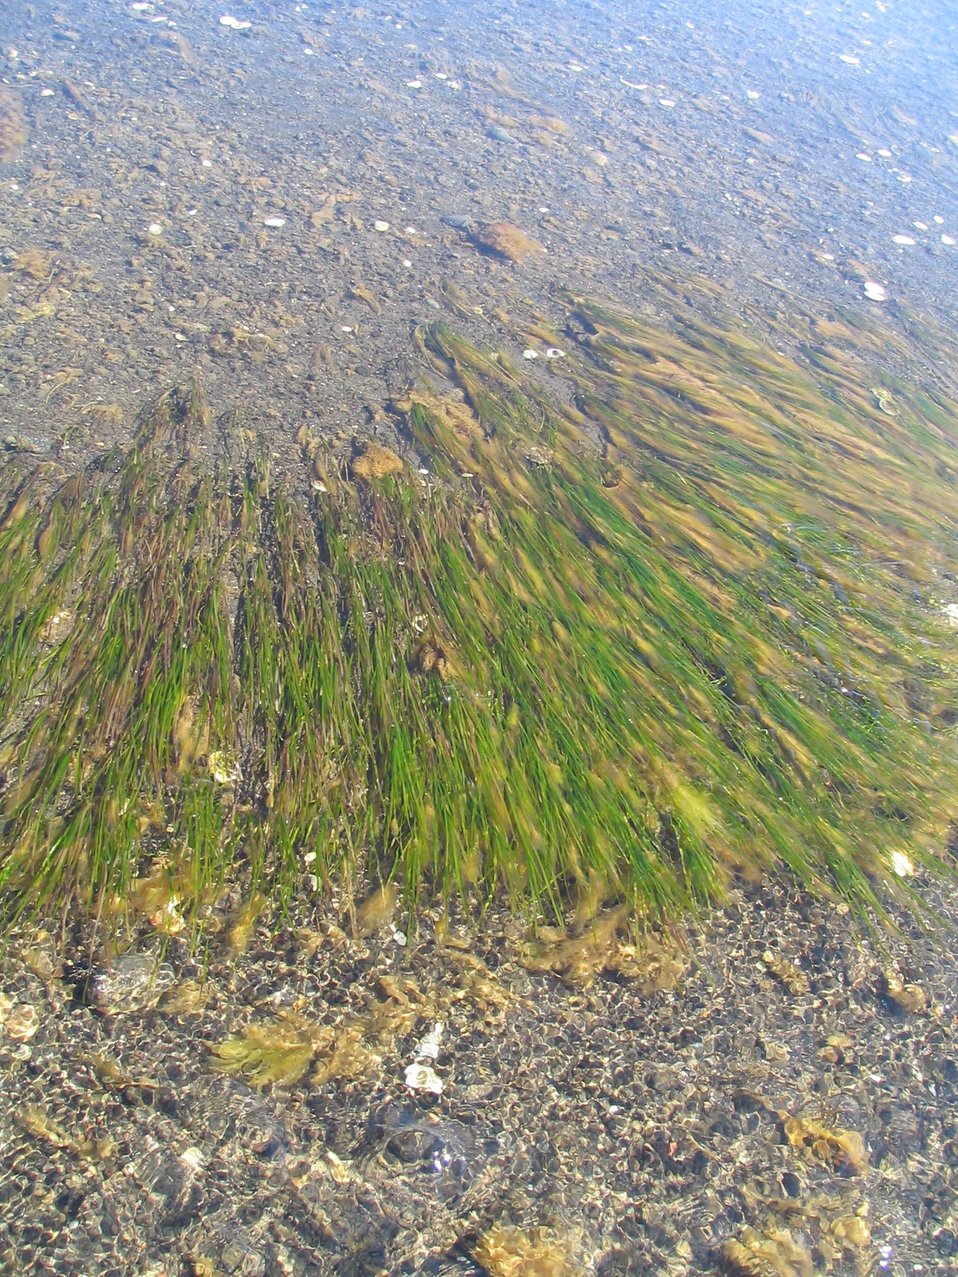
Eelgrass in Kinzarof Lagoon

Kinzarof Lagoon, Izembek National Wildlife Refuge